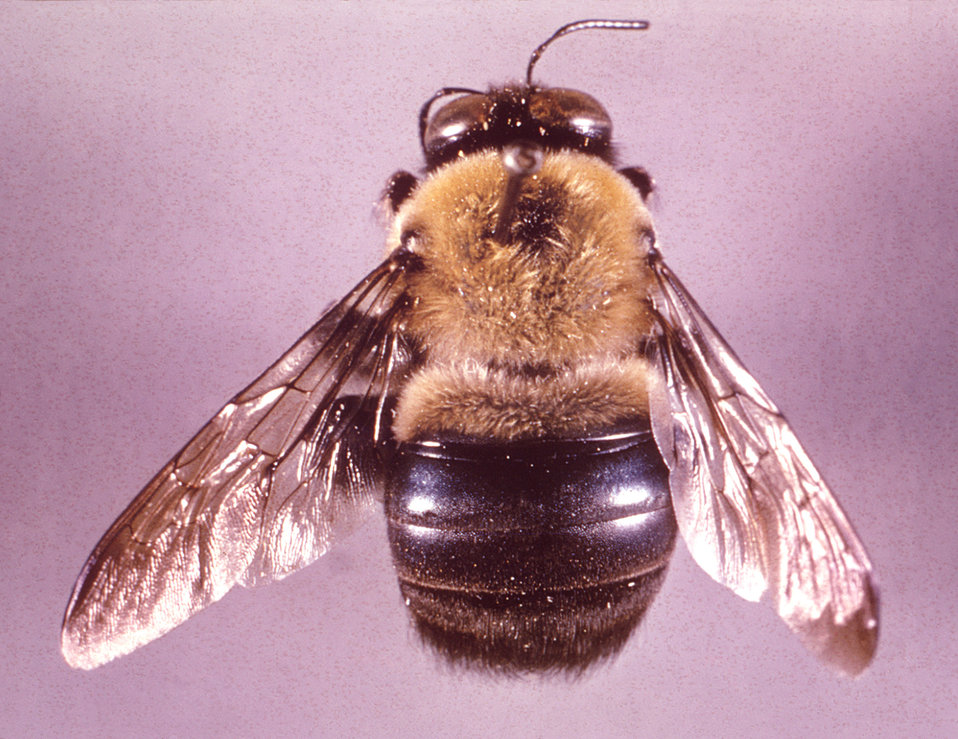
This image depicts a dorsal view of a 'large' carpenter bee, Xylocopa virginica, growing 20mm or larger.